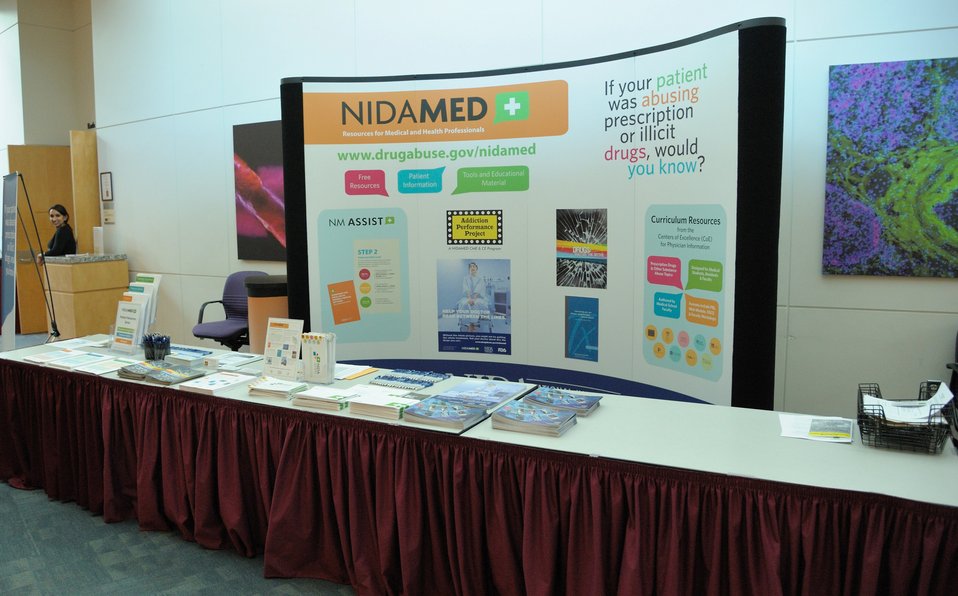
NIDAMED booth2

NIDAMED booth at the Addiction Performance Project, held Aug 5, 2011 on the NIH Campus